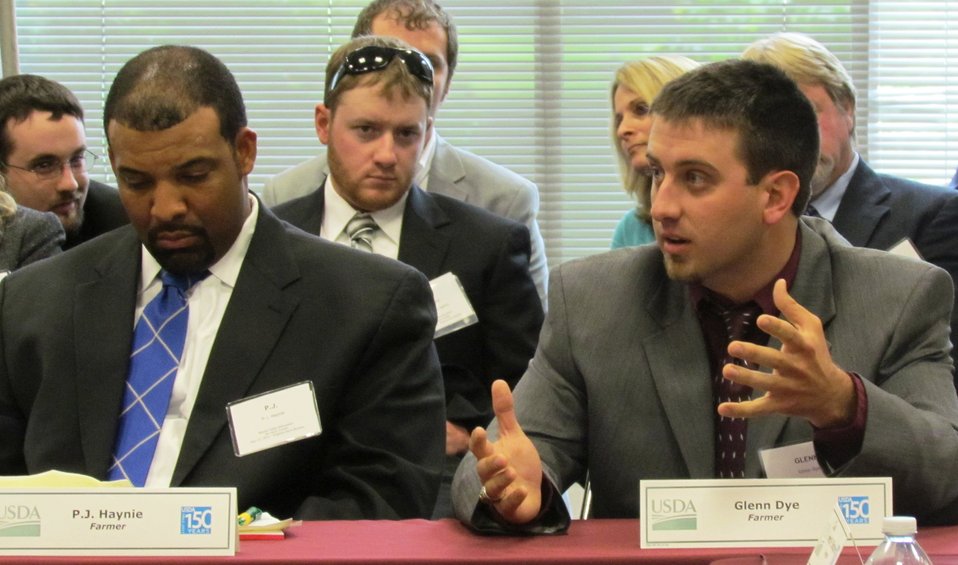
Virginia farmer Glenn Dye asks a question during the roundtable discussion with a group of farmers and ranchers producers in Richmond, VA., on Wednesday, May 23, 2012, while P.J. Haynie (left) listens.